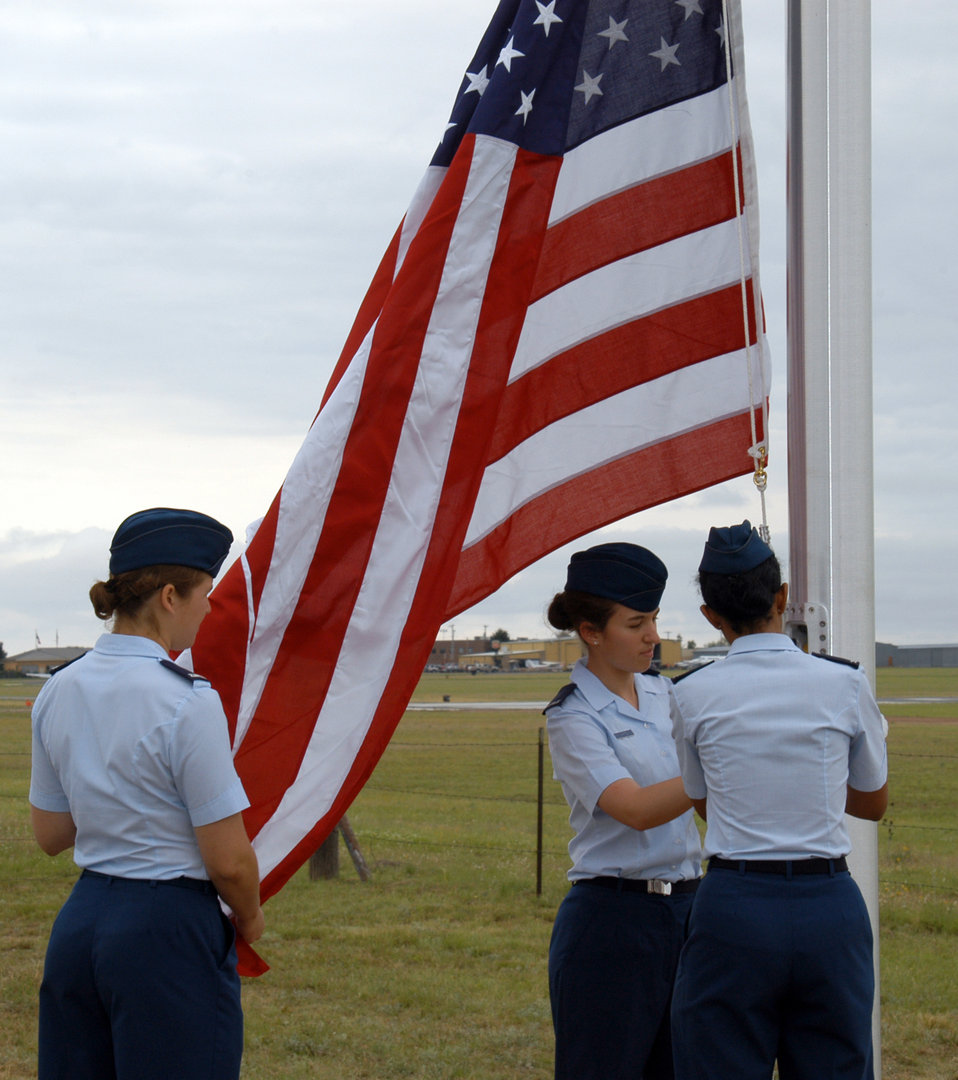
World War II women warriors pass on history, heritage

AVENGER FIELD, Texas -- U.S. Air Force Academy cadets raise the flag during opening ceremonies of the National Women's Airforce Service Pilots World War II Museum here May 28.